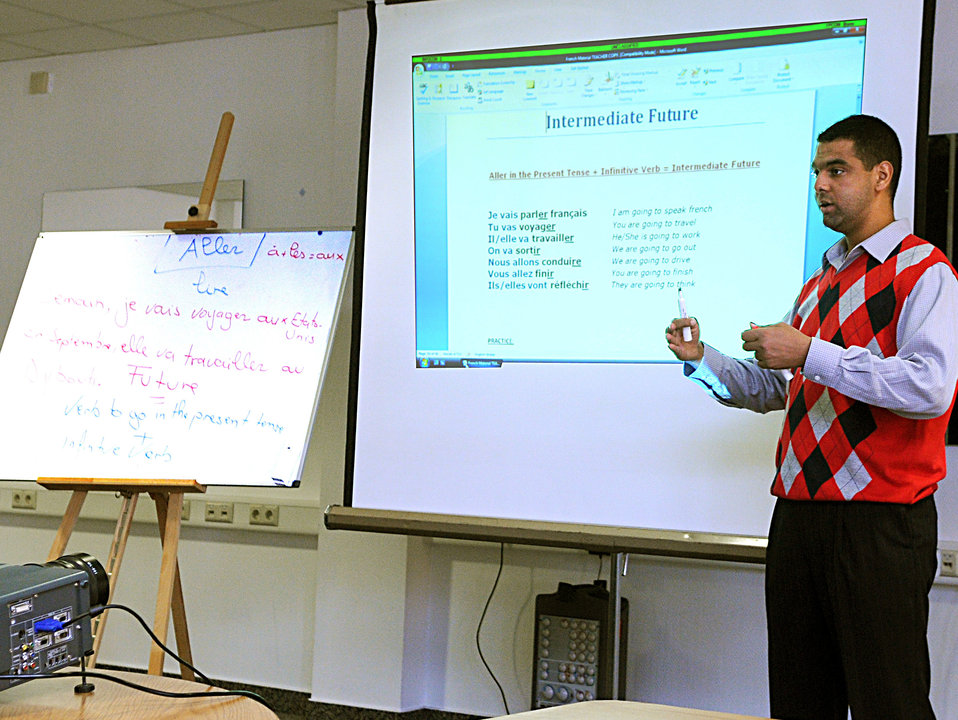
17th Air Force officials take part in cultural training

Tariq Khaitous teaches French immersion classes to members of 17th Air Force Feb. 25, 2010. The classes are designed for Air Force members to be able to better communicate with various African nations in basic French. Mr. Khaitous is an associate professor at the Defense Language Institute in Monterey, Calif.